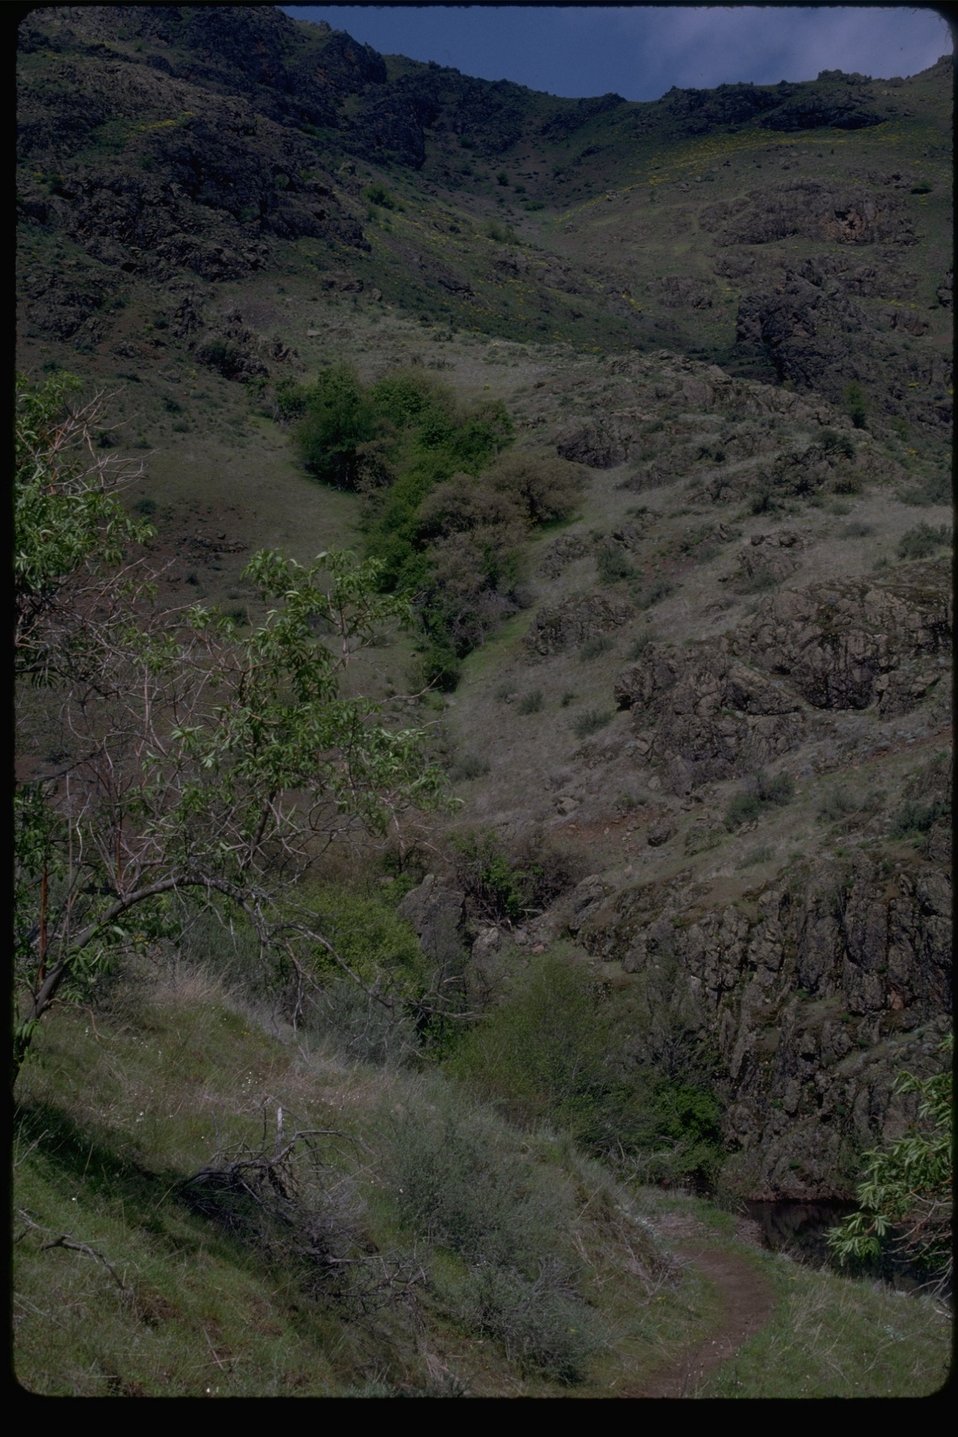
Hiking trail along Nelson Creek in the McGraw Creek Wilderness Study Area. OR 6-1